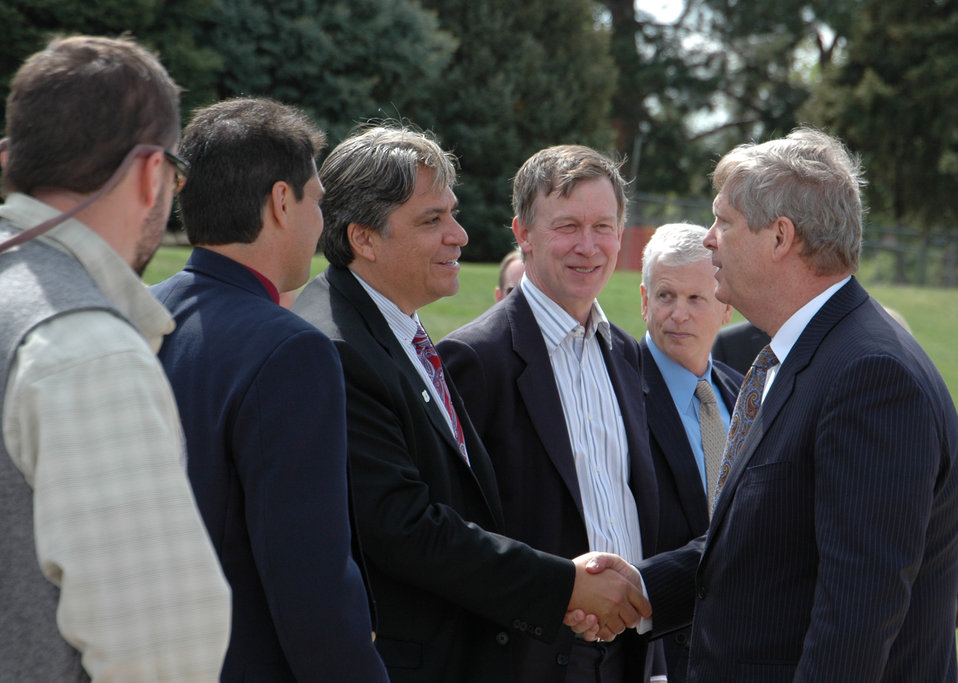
Agriculture Secretary Tom Vilsack greets U.S. Department of Agriculture, Forest Service (FS) Regional Forester, Dan Jiron as Colorado Governor John Hickenlooper and FS Chief Tom Tidwell looks on in Denver Colorado on Wednesday, May 2, 2012.